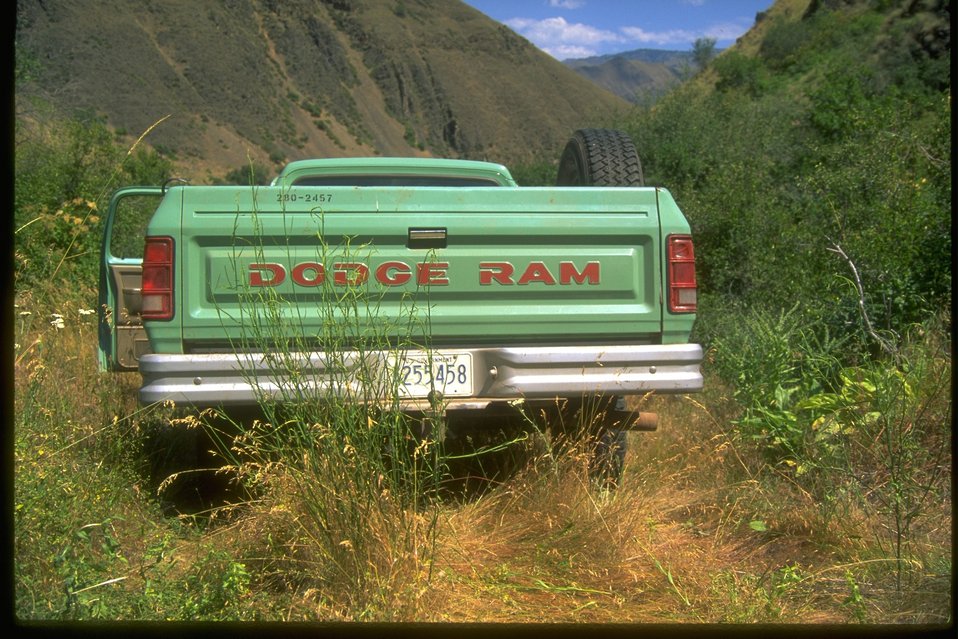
Diffuse knapweed just about go under and perhaps attached to the vehicle in the Lower John Day River area.